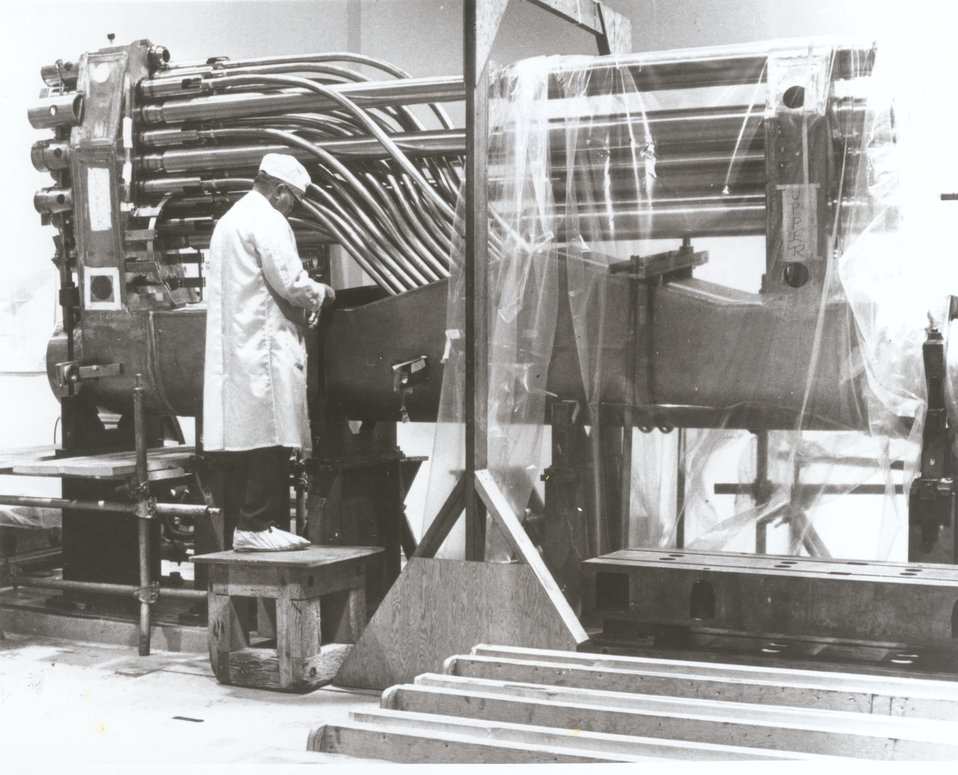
The Westinghouse Marine Division, Sunnyvale, Calif., is fabricating this unique 'instrument tree' for the Fast Flux Test Facility (FFTF). c. 1974